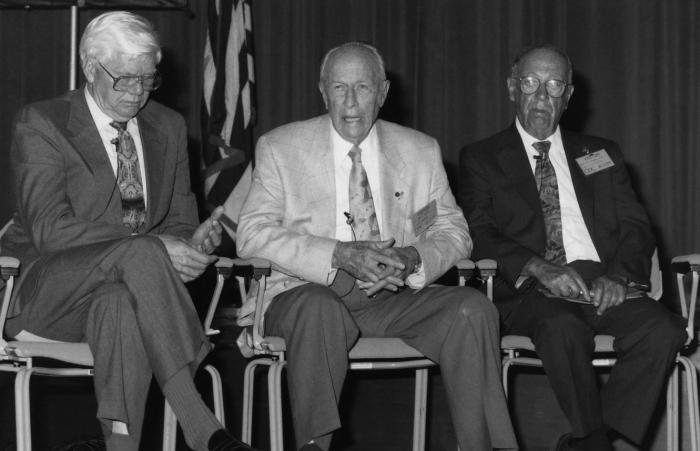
This 1992 photograph, taken during the Centers for Disease Control's 46th anniversary ceremony, showed from left to right organization member William Watson seated alongside former Directors, Dr. Mark D. Hollis (1944 - 1946), and Dr. Theodore J. Bauer (1953 - 1956).